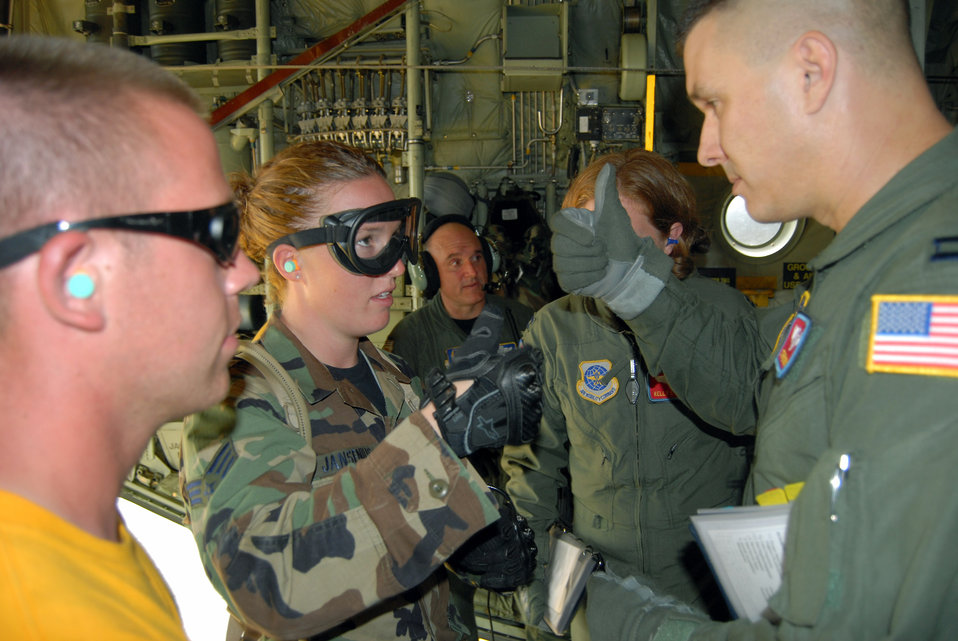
Pope's AES trains Travis Airmen for deployment

Capt. Stephen Urban explains the layout of the C-130H Hercules to Senior Airman Holly Jansenius during mobile aeromedical staging facility training at Fort Bragg's Camp Mackall, N.C., July 10. Captain Urban is assigned to the 375th Aeromedical Evacuation Squadron at Scott Air Force Base, Ill. Airman Jansenius is assigned to the , 60th Inpatient Operations Squadron at Travis AFB, Calif.